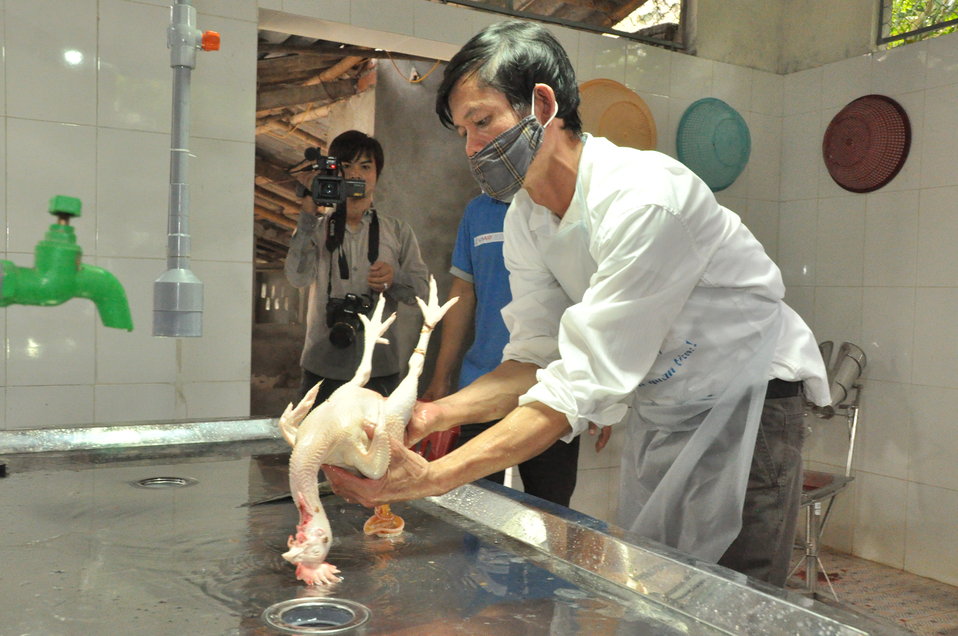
Handover Ceremony Hoa Mac Market Ha Nam

October 26, 2012